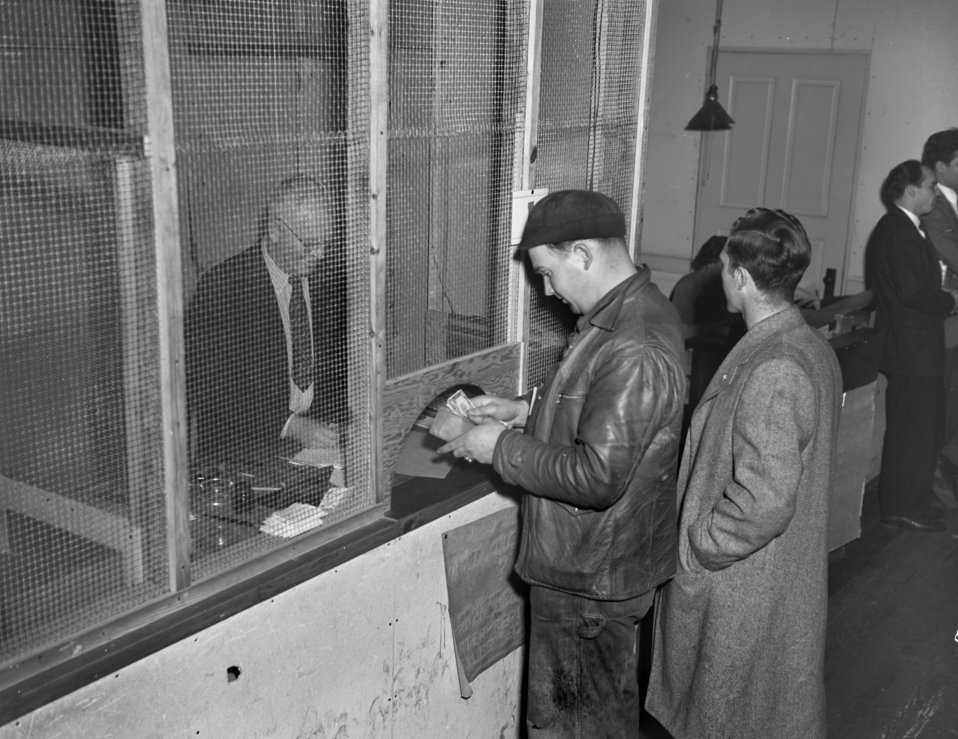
W.A.A. Auto Sale Oak Ridge 1947

3304-5g DOE photo Ed Westcott 2-18-1947 War Assets Administration Exclusive Sale for Vet of WW II Automotive Vehicles at Elza Gate Oak Ridge Tennessee